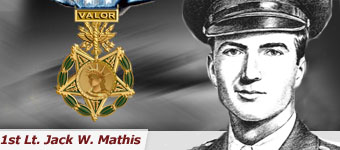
1st Lt. Jack W. Mathis

First Lt. Jack W. Mathis was the lead bombardier in a B-17 Flying Fortress squadron on a bombing run over Vegesack, Germany, March 18, 1943. Lieutenant Mathis was mortally wounded from antiaircraft fire, but dragged himself to his bomb sight to complete the mission. He died at his post. Due to his heroic actions, he was awarded the Medal of Honor posthumously.